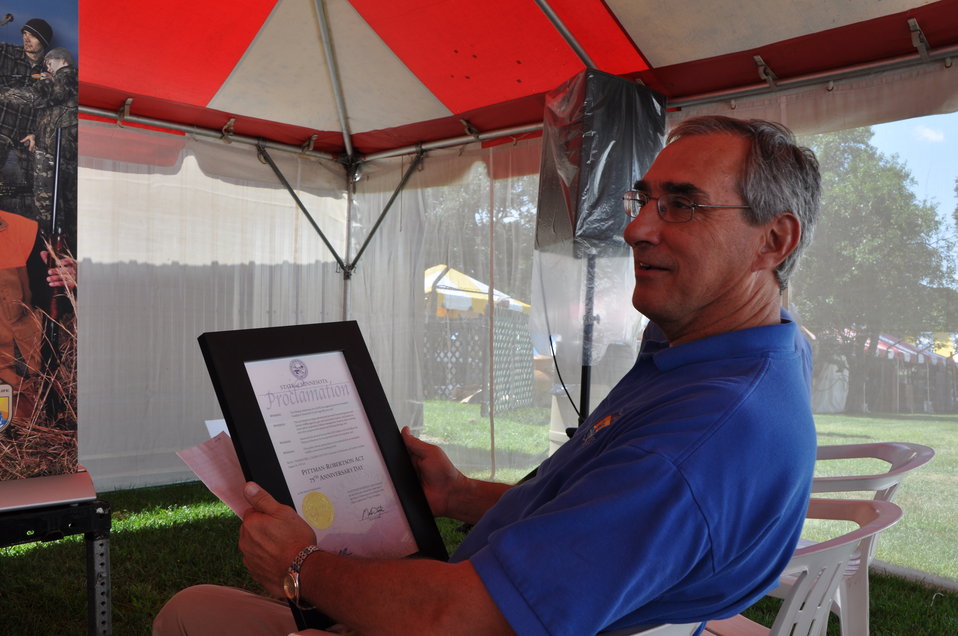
Service Regional Director admiring Governor's proclamation.